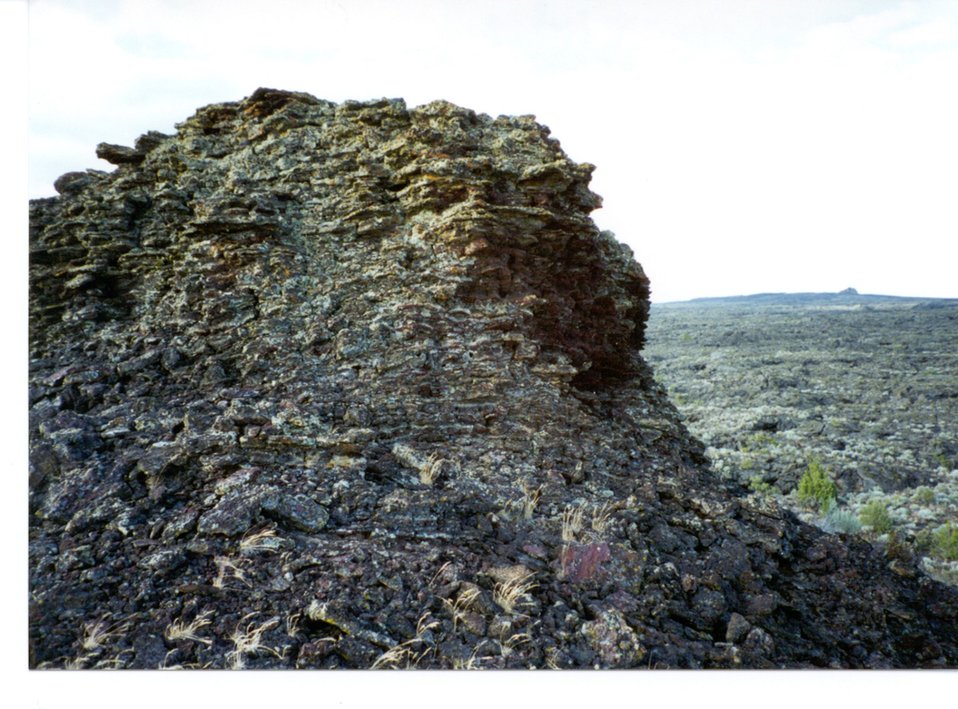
Summit of Old Juniper and Pillar Butte Craters of the Moon Shoshone Field Office USRD Upper Snake River District